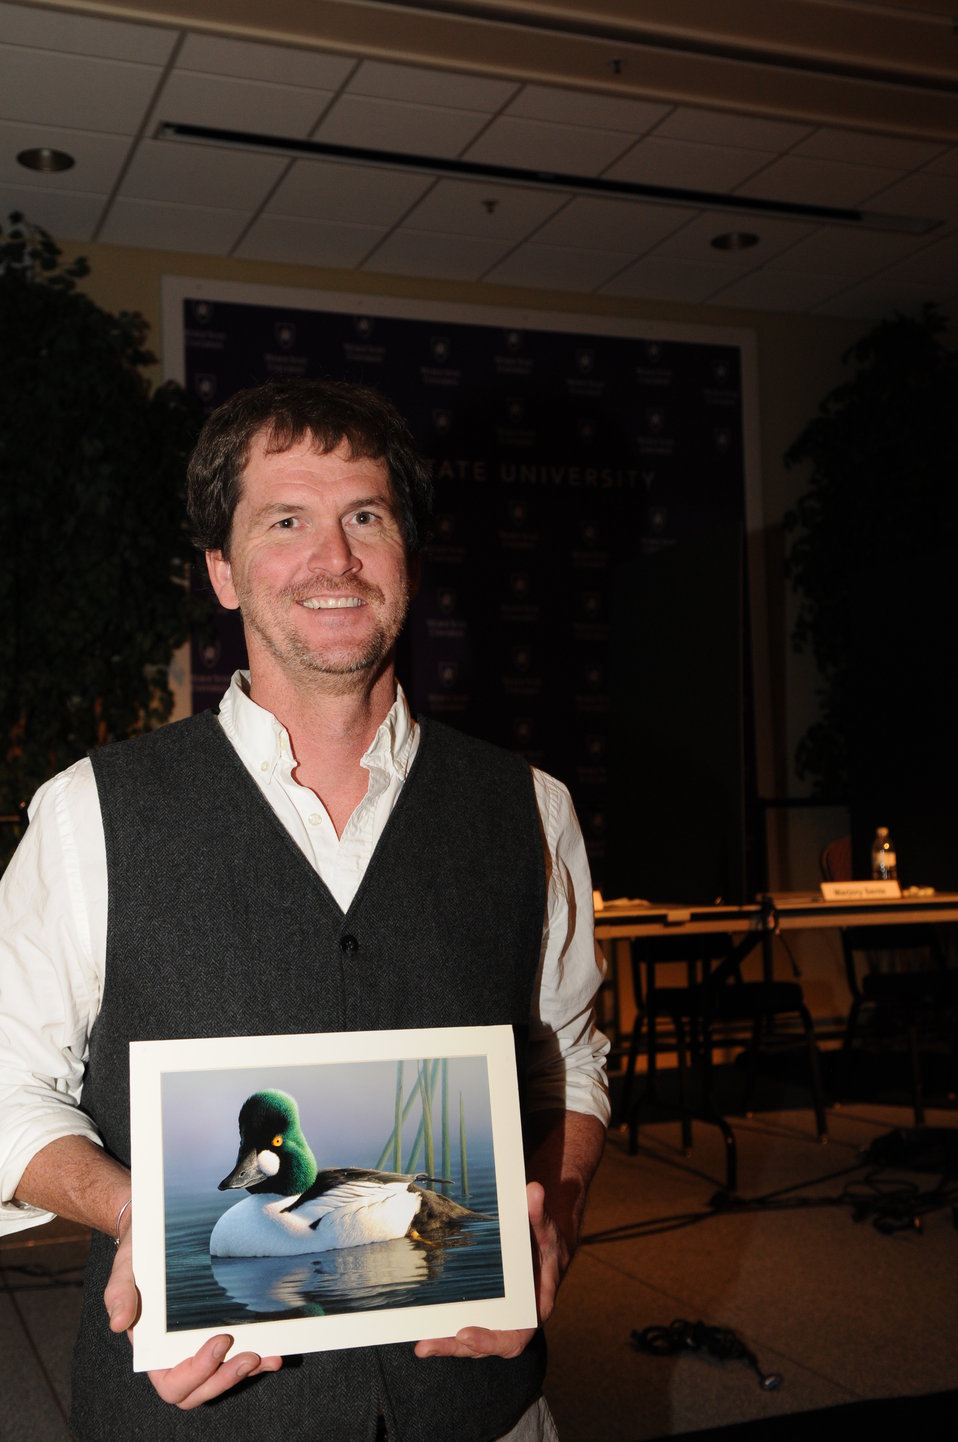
Everyone Loves a Winner

The U.S. Fish & Wildlife Service sponsored the 2012 Federal Duck Stamp Art Contest September 28 and 29 in Ogden, Utah, at Weber State University. A panel of five judges was responsible for choosing the art work used to design the 2013-2014 Migratory Bird Hunting and Conservation Stamp.